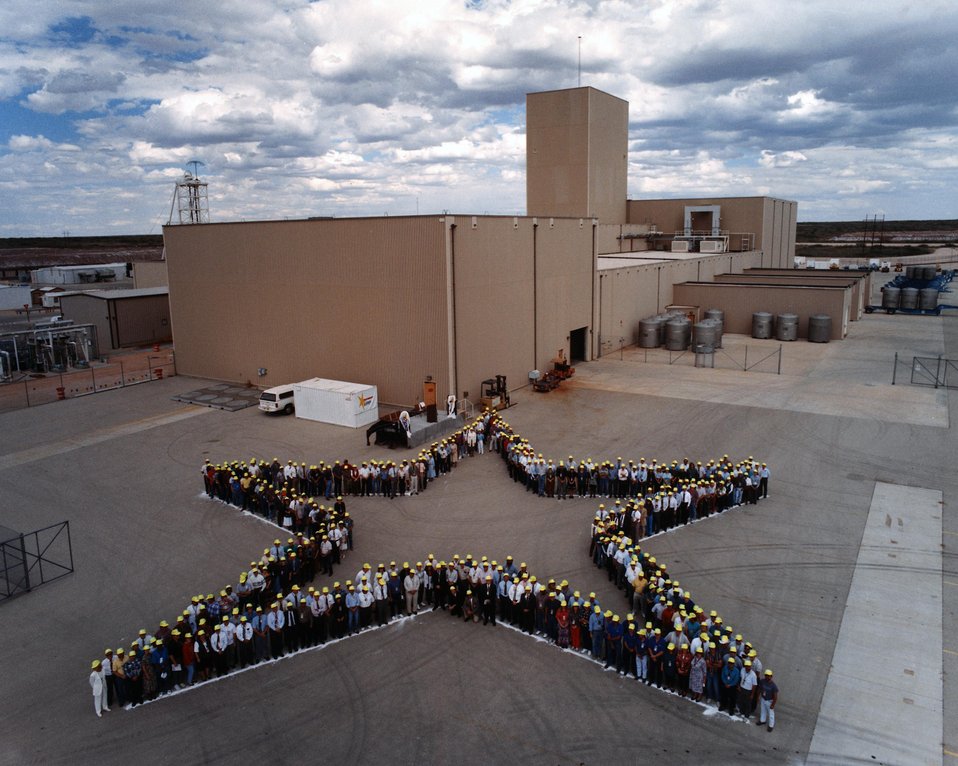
WIPP EMPLOYEES FORMING THE VOLUNTARY PROTECTION PROGRAM STAR. (OCTOBER 1994)

THIS PICTURE WAS TAKEN IN OCTOBER, 1994 WHEN WIPP BECAME THE FIRST DOE SITE TO EARN 'STAR' STATUS IN DOE'S VOLUNTARY PROTECTION PROGRAM. DOE INITIATED THE PROGRAM IN 1994 TO ENCOURAGE AND RECOGNIZE EXCELLENCE IN OCCUPATIONAL SAFETY AND HEALTH EXCELLENCE THROUGH COOPERATIVE EFFORTS AMONG LABOR, MANAGEMENT, AND GOVERNMENT AT DOE SITES.